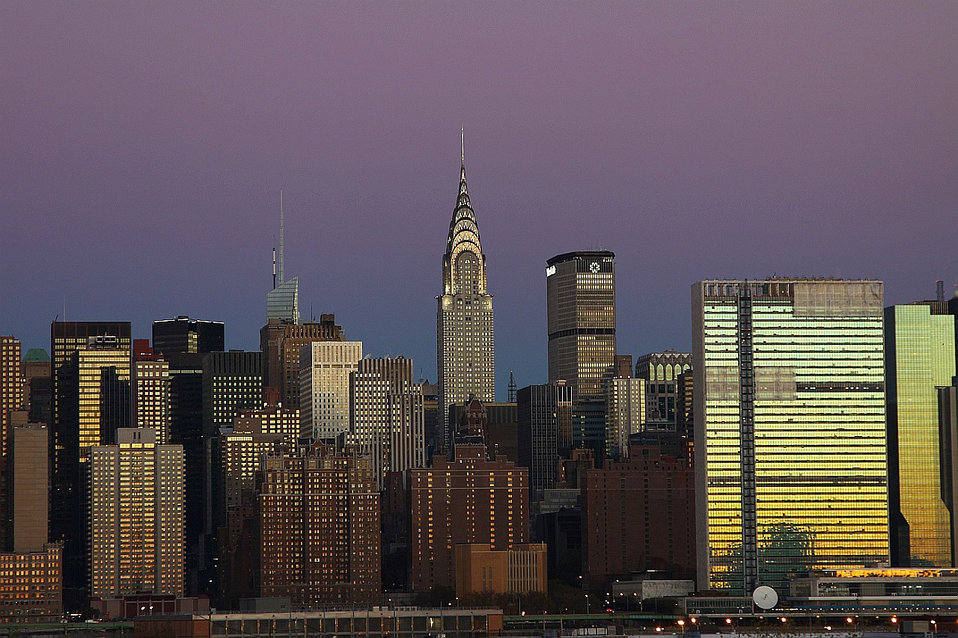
Chrysler building

Early morning in manhattan.